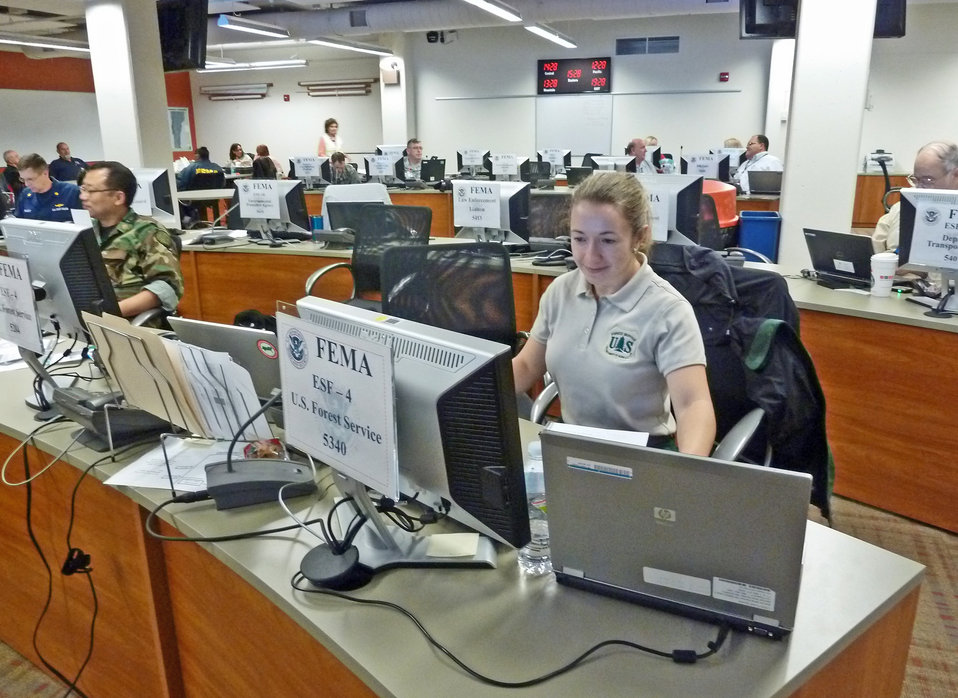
FEMAR1RRCC SmithESF4-a

U.S. Forest Service wildland firefighter Rachel Smith is the ESF4 Lead at the Federal Emergency Management Agency (FEMA) Region 1 Regional Response Coordination Center Maynard, MA on Oct. 30, 2012.